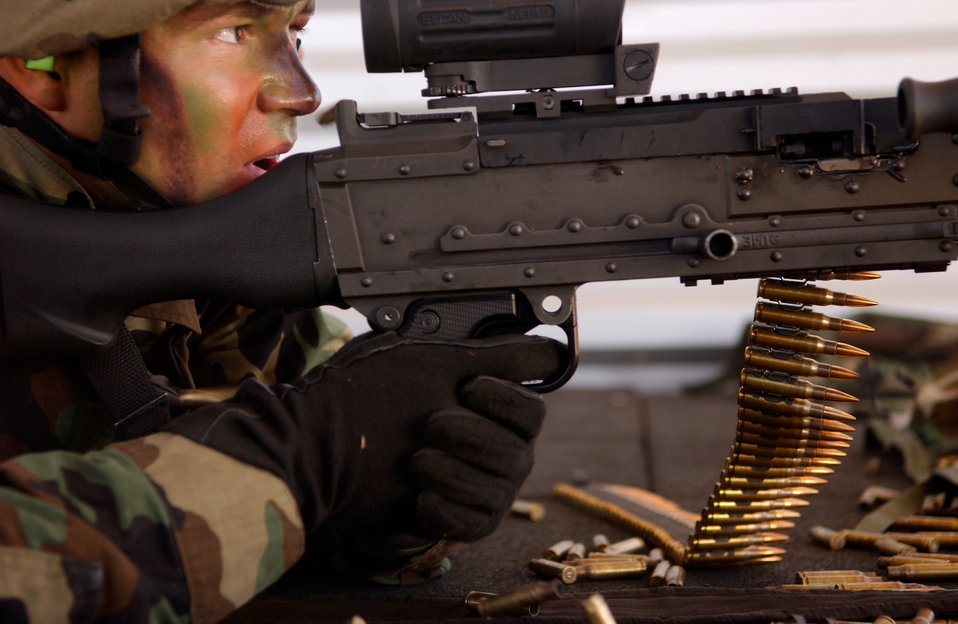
Defender Challenge 2004

FORT HUACHUCA, Ariz. -- Senior Airman Dustin McPhillips fires the M-240B machine gun during an exercise here recently. Members of the U.S. Air Forces in Europe Defender Challenge team are spending three weeks here in preparation for the 2004 Defender Challenge competition. Defender Challenge held at Lackland Air Force Base, Texas, is a security forces competition pitting competitors from major commands against one another. Airman McPhillips is assigned to the 568th Security Forces Squadron at Ramstein Air Base, Germany.